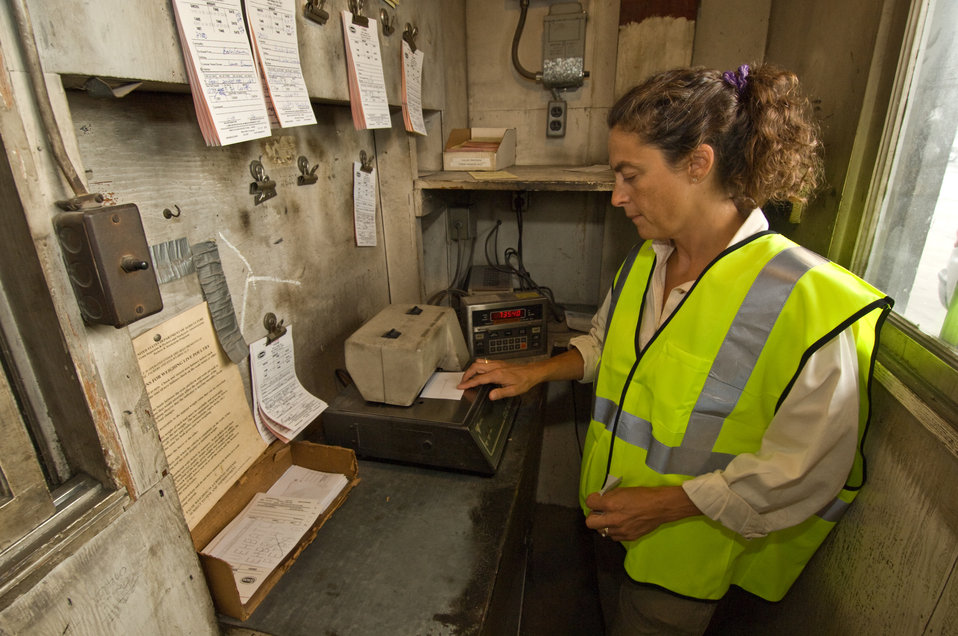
U.S. Department of Agriculture (USDA) Grain Inspection, Packers, and Stockyards Administration (GIPSA) resident agent Mary Heisey prints a scale ticket during for the reweight of a live poultry truck at a poultry processing plant in Paradise, Pennsylvania on July 22, 2008. GIPSA is a USDA agency that facilitates the marketing of livestock, poultry, meat, cereals, oilseeds, and related agricultural products, and promotes fair and competitive trading practices for the overall benefit of consumers and American agriculture.